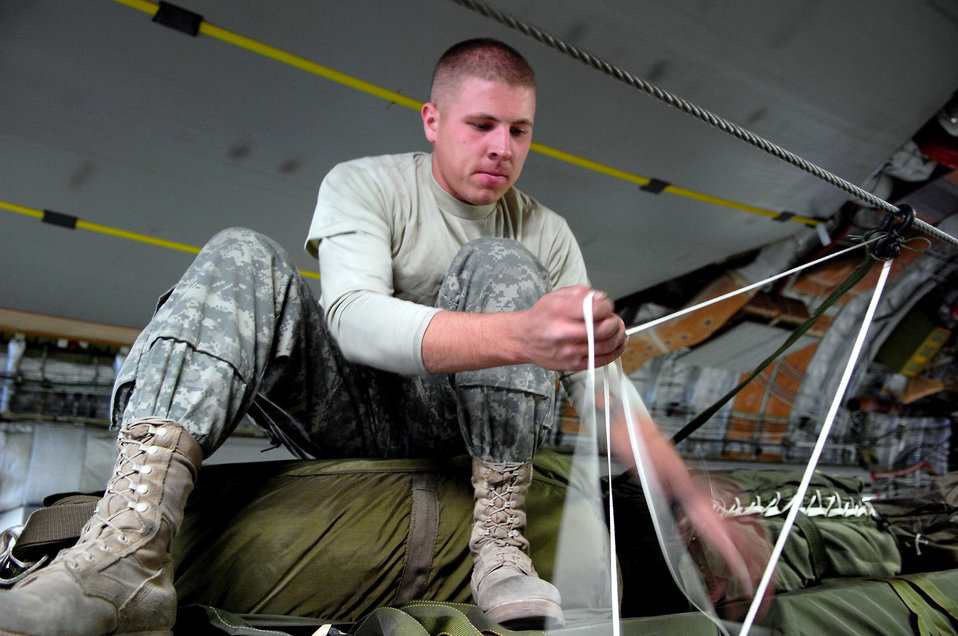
C-17 crews make record airdrop

Army Spc. Joshua Black attaches one of 62 parachute ripcords to the static line of a C-17 Globemaster III Oct. 11 at Bagram Air Base, Afghanistan. The 62 cargo bundles were dropped from two C-17s to a drop zone in Afghanistan. This was the first time a combat cargo drop of this magnitude has taken place from two C-17s in formation over one drop zone. Specialist Black is a rigger with the 11th Quartermaster Company, 82nd Airborne.